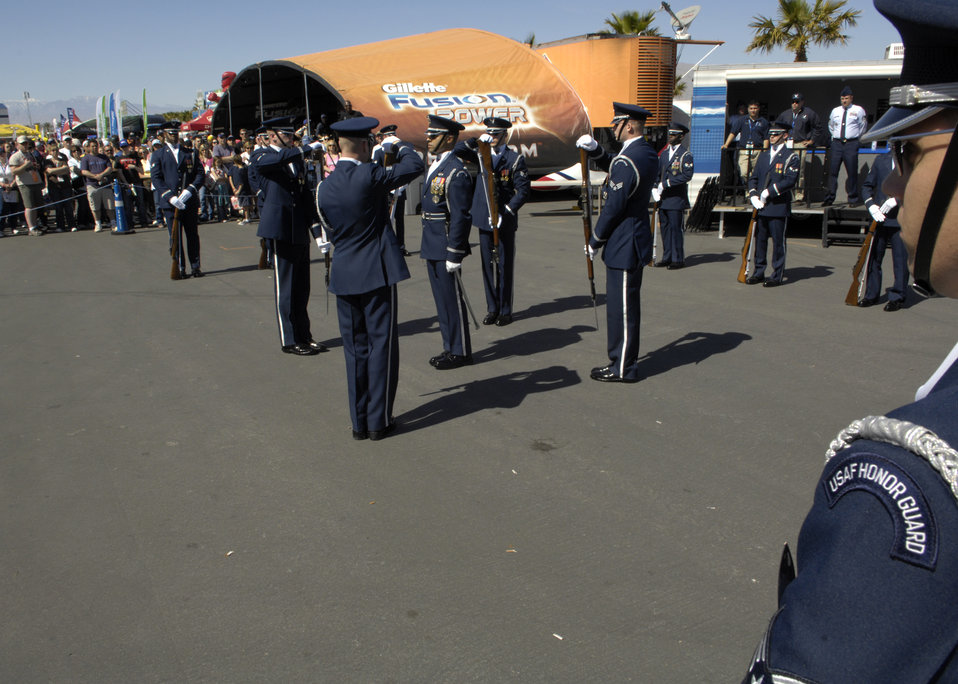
Drill Team performs at Busch Series Race

The United States Air Force Honor Guard Drill Team perform at the Las Vegas Motor Speedway, Las Vegas, Nev., March 10, 2007. The Drill Team is the traveling component of the Air Force Honor Guard and tours Air Force bases world wide showcasing the precision of today's Air Force to recruit, retain, and inspire Airmen for the Air Force mission.